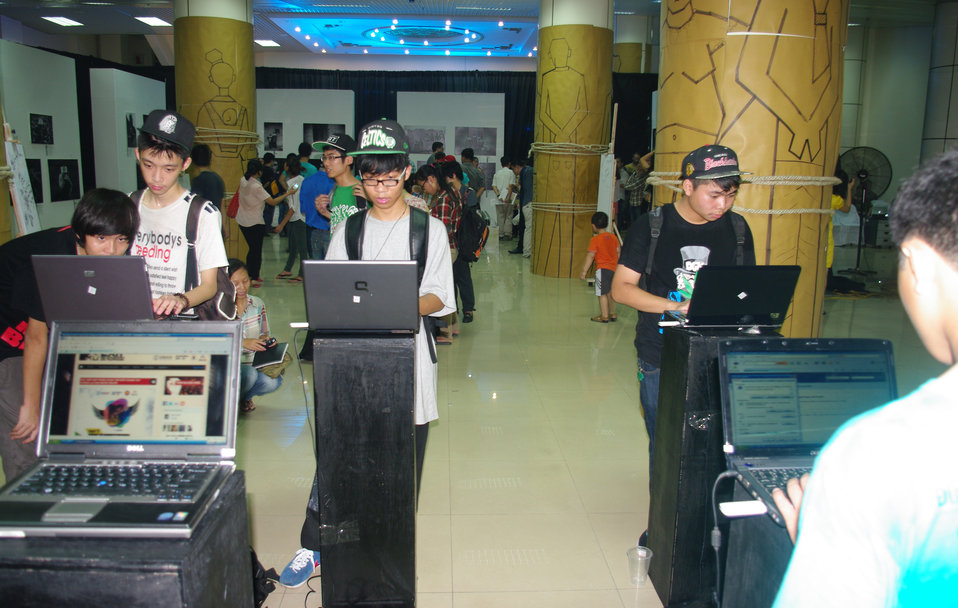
MTV EXIT opens Youth Forum in Hanoi